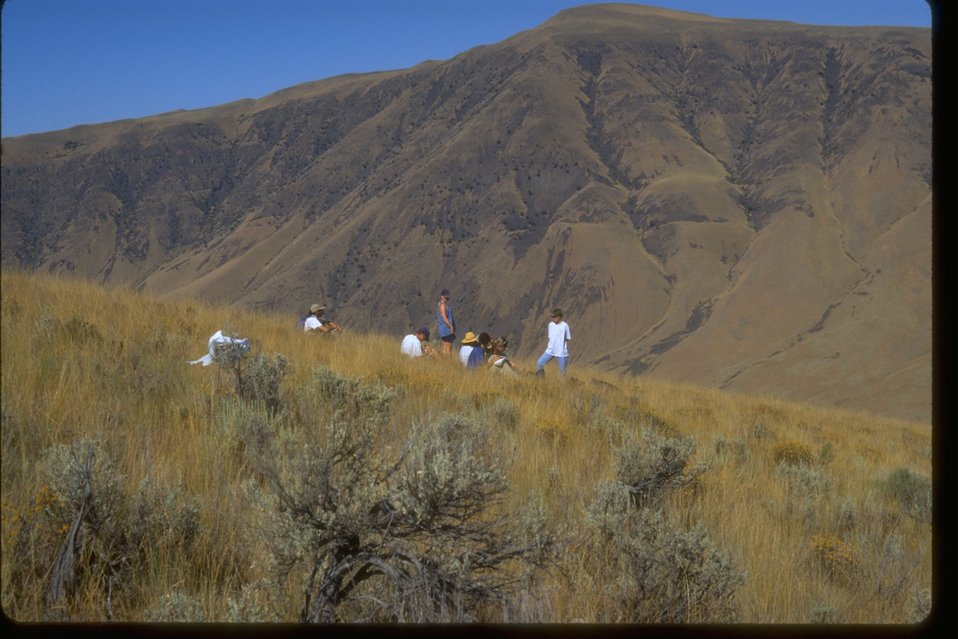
Central Washington University students participate in archaeology field school in Kittitas County, Washington.